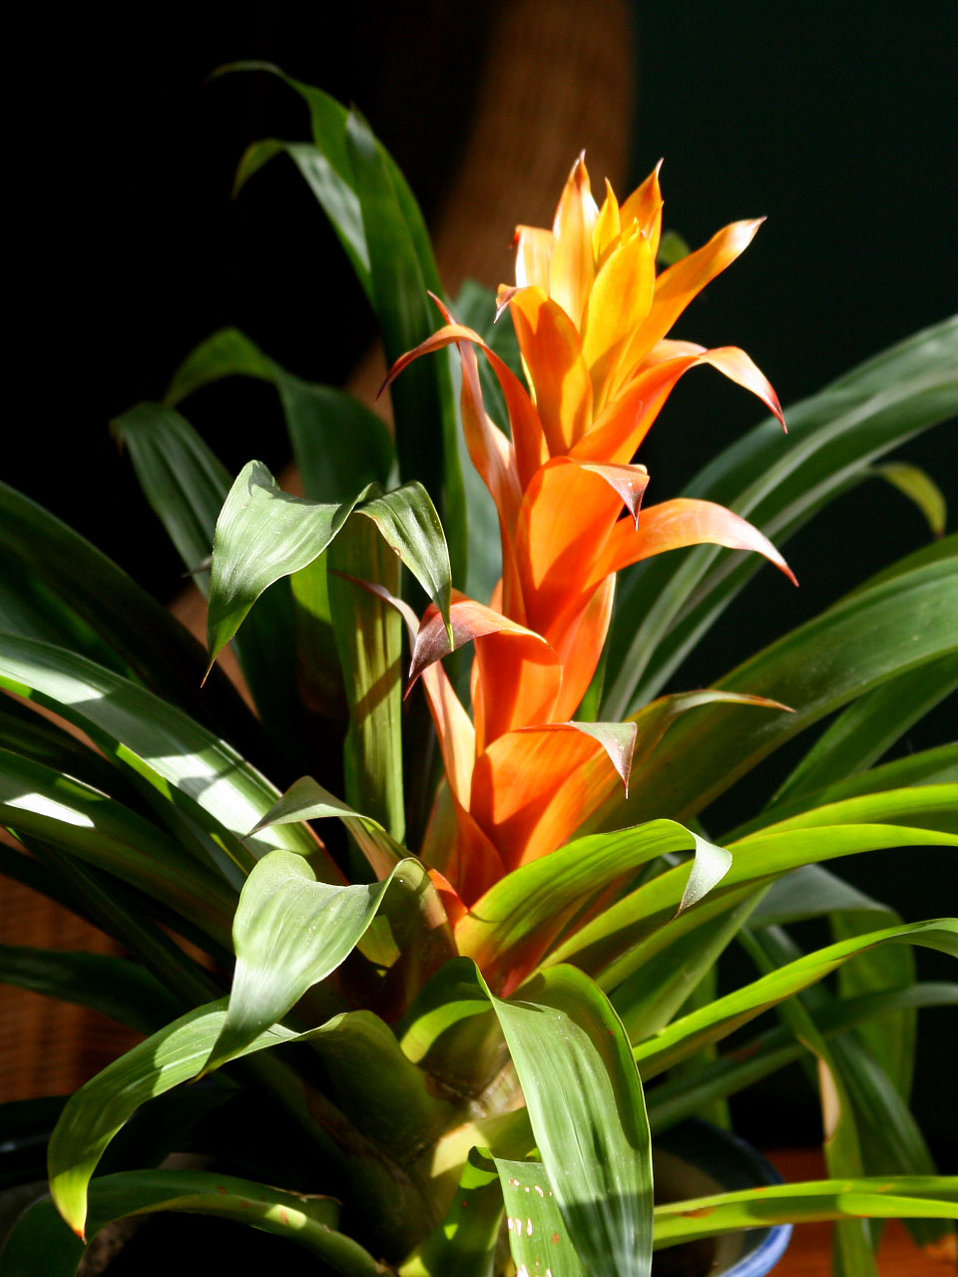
Sun struck bromeliad

Fiery bromeliad sitting on a table near the window positively glowed in the late day sun..